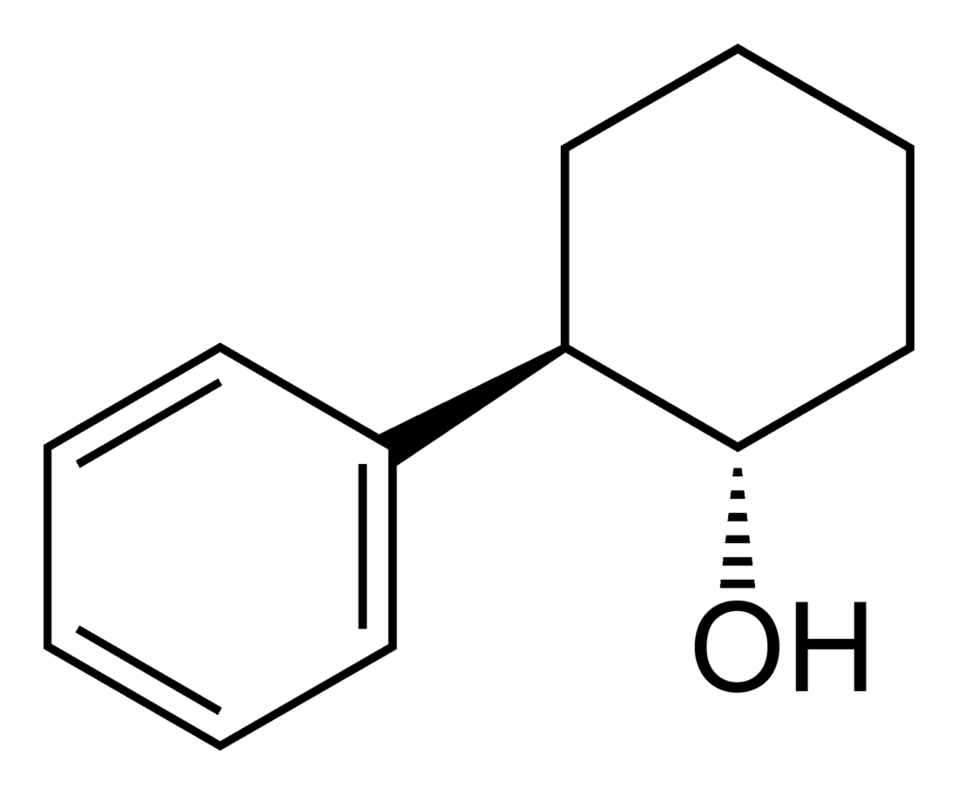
Skeletal formula of (1S,2R)-2-phenylcyclohexanol, C12H16O